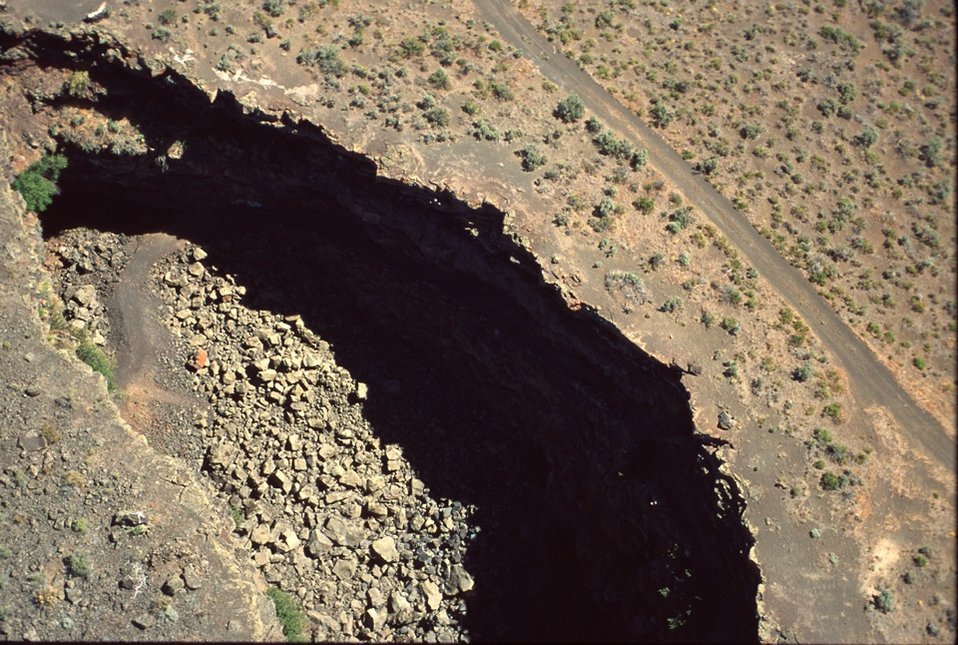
Shoshone Field Office USRD Upper Snake River District